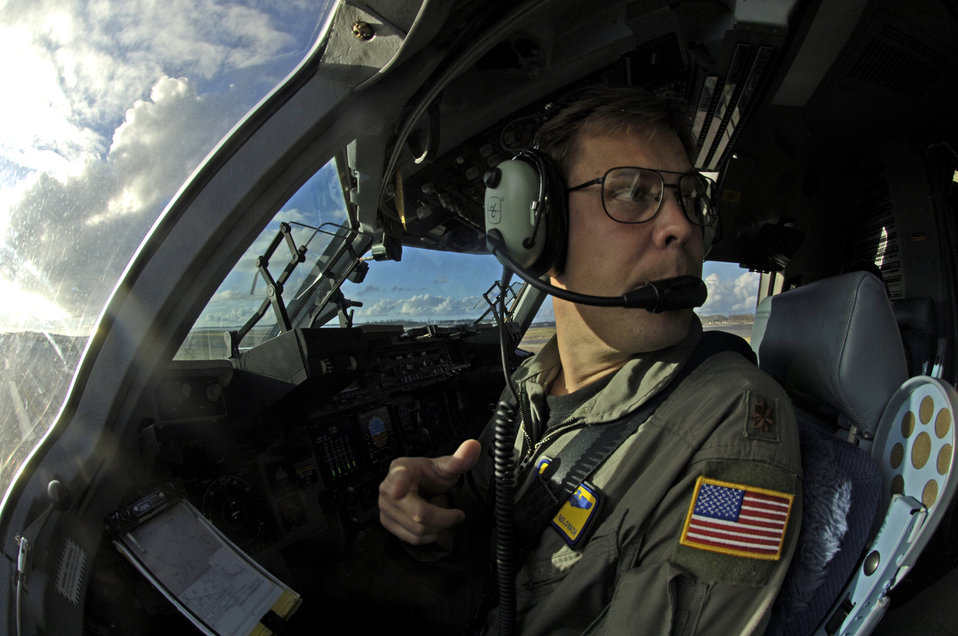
First look at Wake: Less damage than feared

Maj. Joseph Golovach conducts last-minute checks before taking off from Wake Island Sept. 12. The C-17 is taking the 36th Contingency Response Group back home to Andersen Air Force Base, Guam. The 36th CRG was the initial assessment team on the island to survey the damage after the island was hit by Super Typhoon Ioke Aug. 31. Major Golovach is from the 535th Airlift Squadron at Hickam Air Force Base, Hawaii.